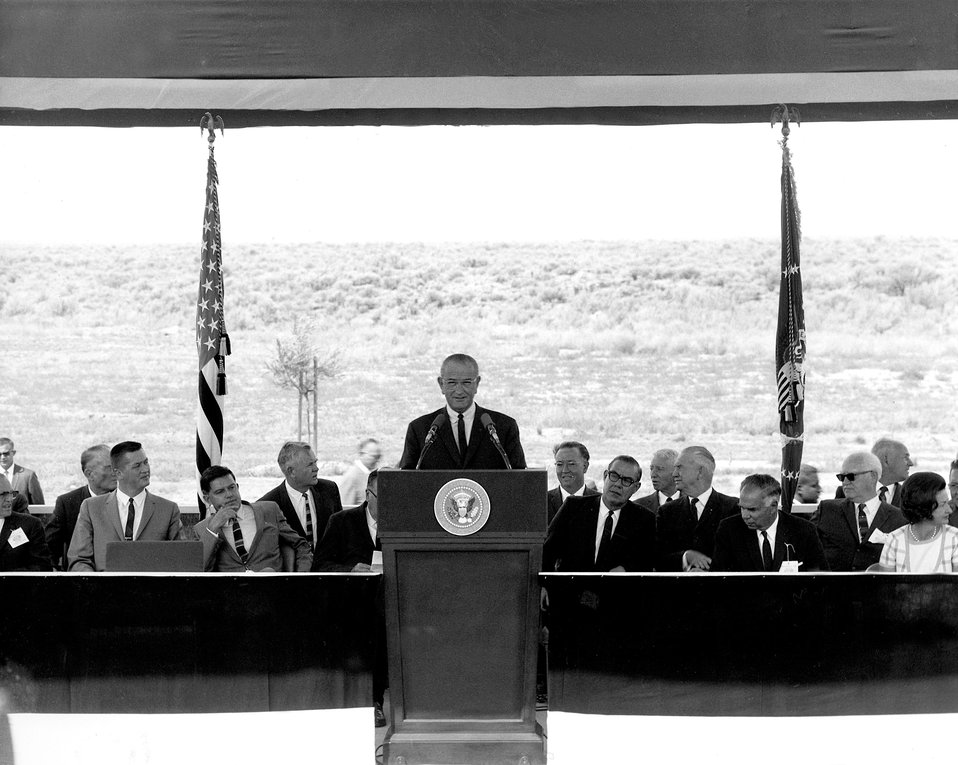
President Lyndon B. Johnson in Idaho..